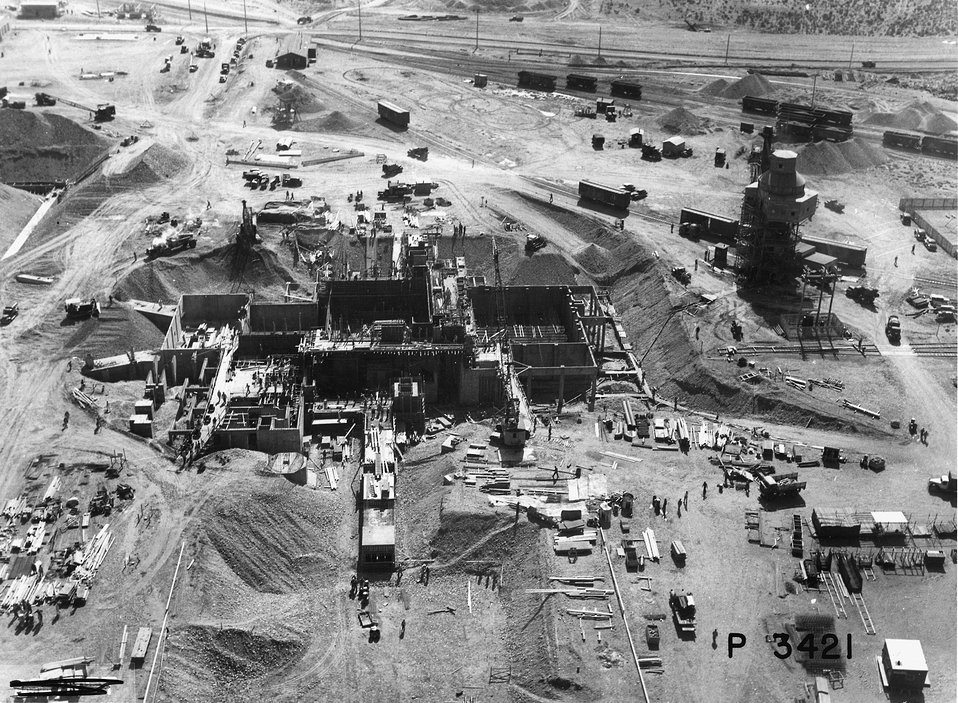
Pile Building. c. 1944